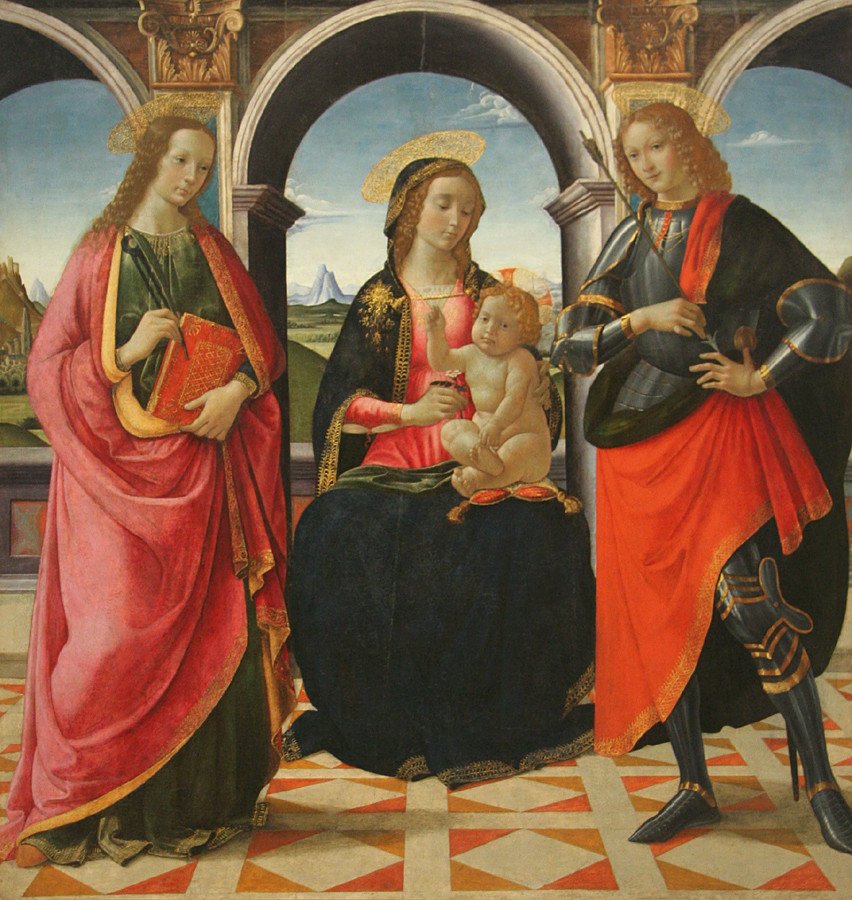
'The Virgin and Child with Saints Apollonia and Sebastian', tempera on panel painting by Davide Ghirlandaio, 1490-1499, Philadelphia Museum of Art